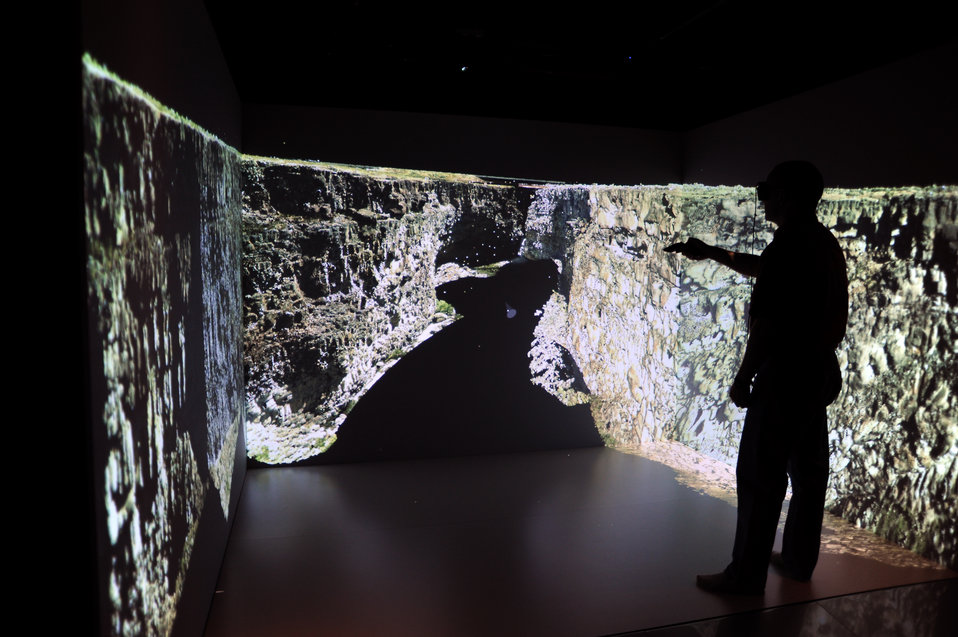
Researchers can use the Computer-Assisted Virtual Environment (CAVE) at INL's Center for Advanced Energy Studies to examine Lidar data of Idaho's Malad Gorge.